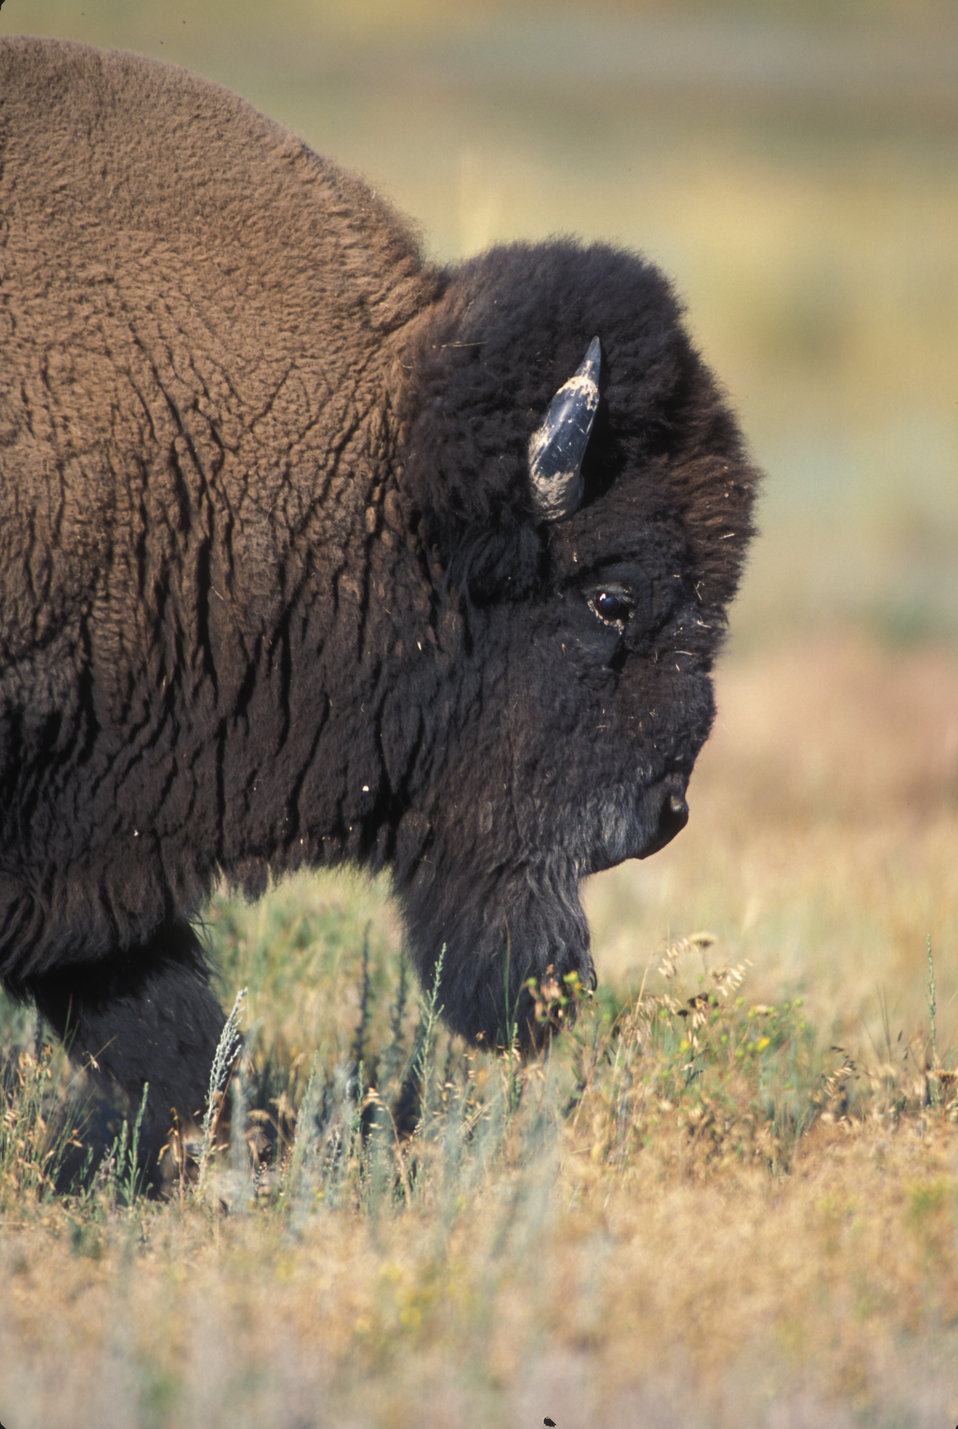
Bison eating grass in a field

Close-up profile of front half of buffalo bull. Vertical. Resource links:http://www.fws.gov/bisonrange/nbr/